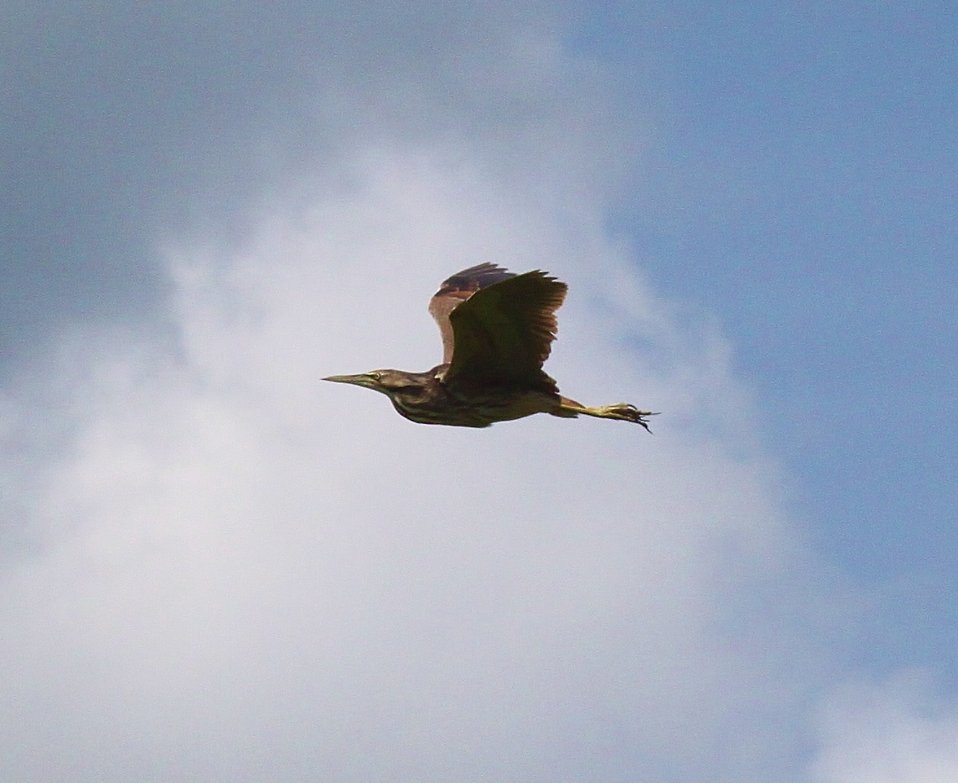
American bittern in flight.